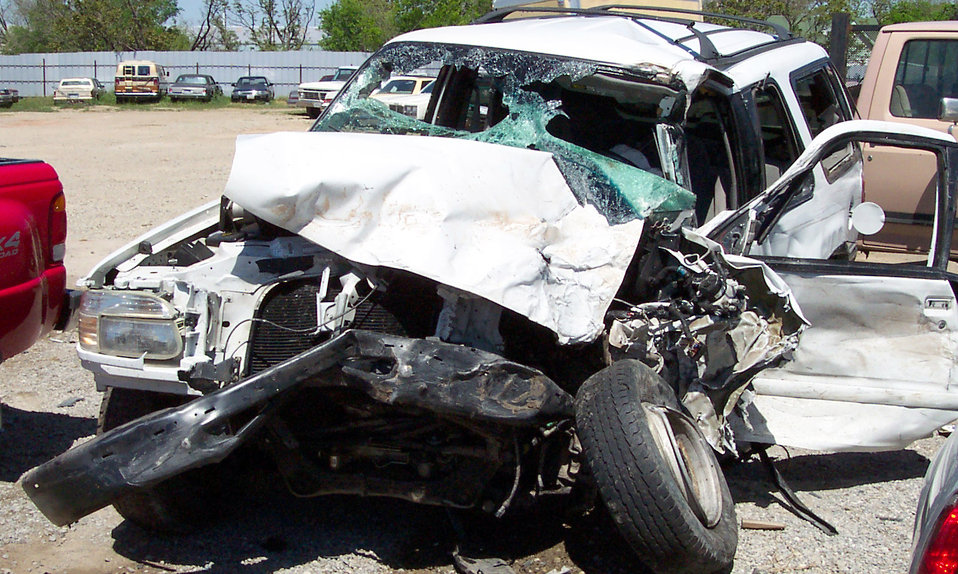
Blood donations save life

WITCHITA FALLS, Texas -- Retired Tech. Sgt. Derrick Duncan's sport utility vehicle sits in a salvage yard following an accident in April. Emergency personnel had to use the